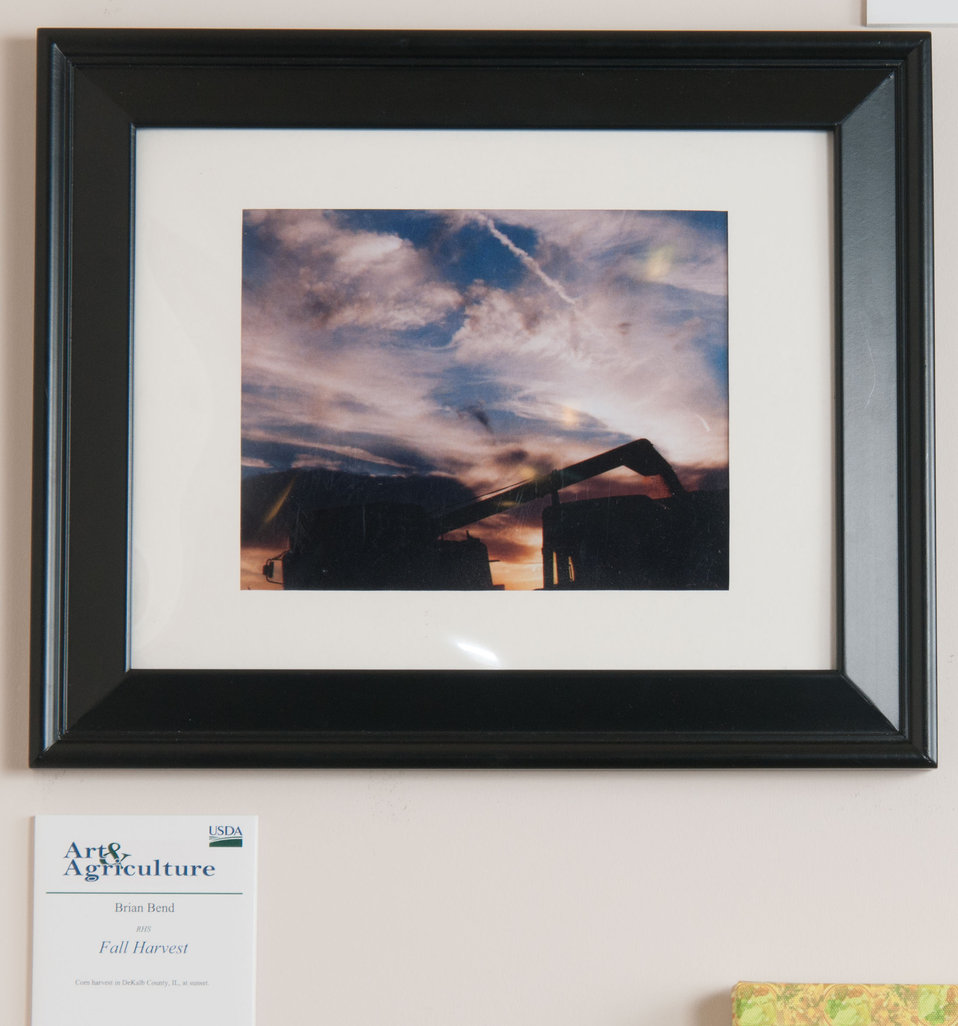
Online Viewer's Choice entries of the 2013 Art & Agriculture, Tuesday, July 9, 2013, in the South Building, Washington, D.C. Themes were expressed by employees from across the department and the contest was open to full-time and part-time USDA employees. Winning artwork will be displayed till the end of the year. U.S. Artistic expression is a creative outlet that is vital for an individual to grow and develop.